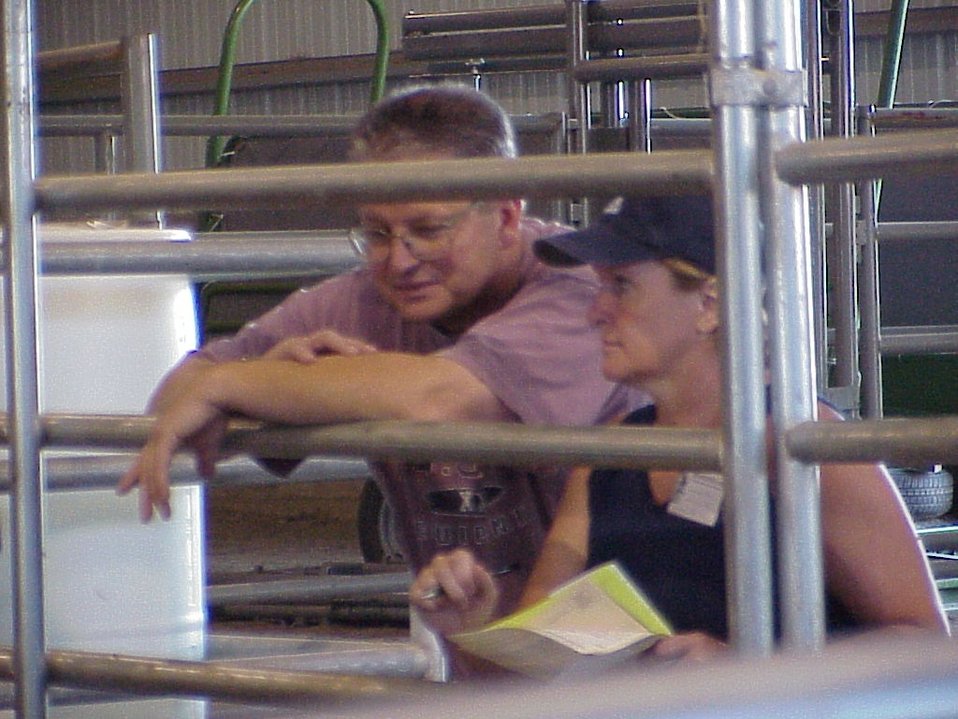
Lewiston Wild Horse and Burro Adoption Program Auction WHB indoor auction Cottonwood Field Office UCSC Upper Columbia Salmon Clearwater District